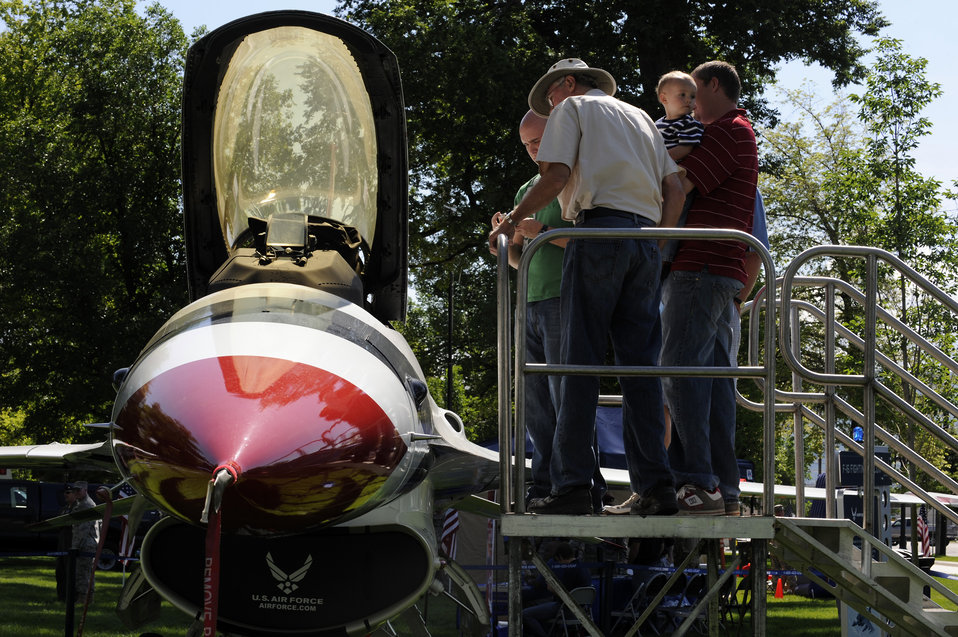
Our Nation's Defenders Showcase

Salt Lake City locals check out an F-16 Fighting Falcon on display at the